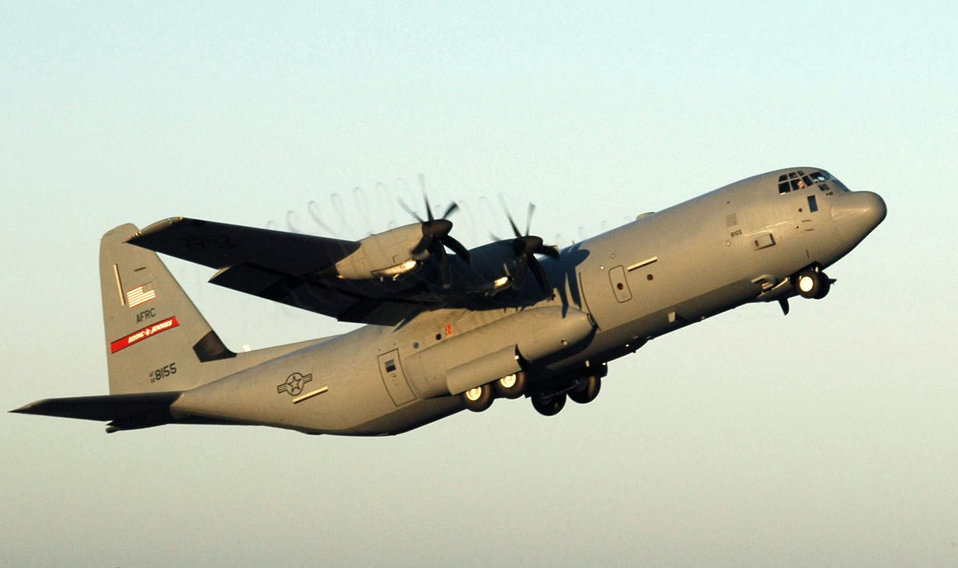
Air Force Reserve unit tests C-130J in Southwest Asia

SAN ANTONIO -- A C-130J Hercules, like the one shown here, made a first-ever combat airdrop June 30. The mission supported an Army air assistance request for troop re-supply and civic assistance to be dropped in the vicinity of Kandahar, Afghanistan.